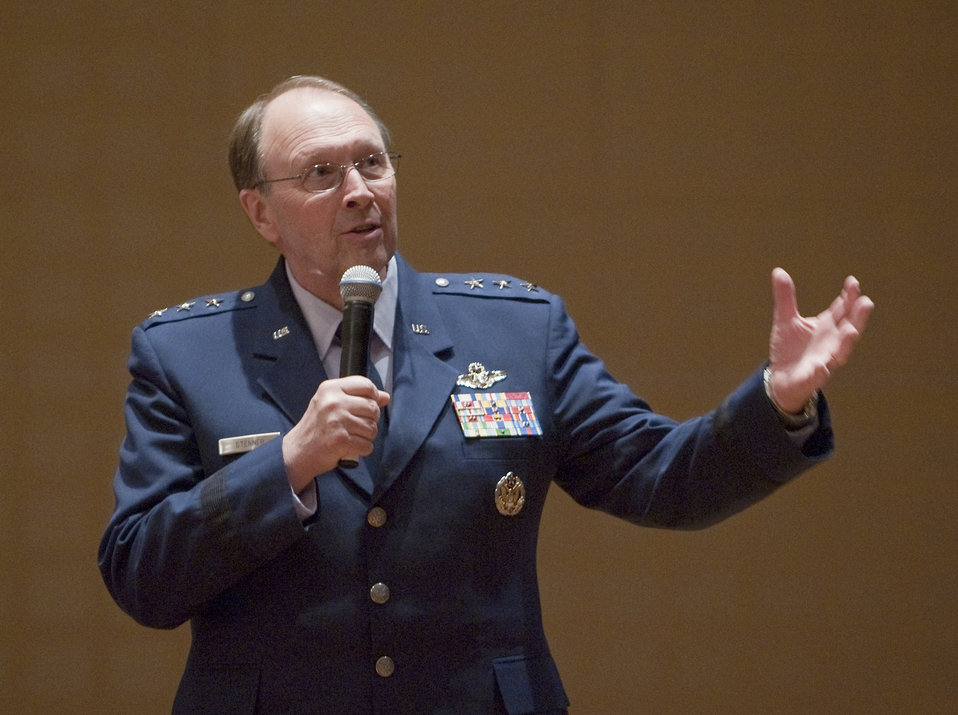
Air Force Reserve Command Senior Leader Conference

Chief of the Air Force Reserve and Air Force Reserve Command Commander Lt. Gen. Charles Stenner poses a question to Secretary of the Air Force Michael Donley during the 2011 Air Force Reserve Command Senior Leaders Conference on May 16, 2011, in Washington, D.C.